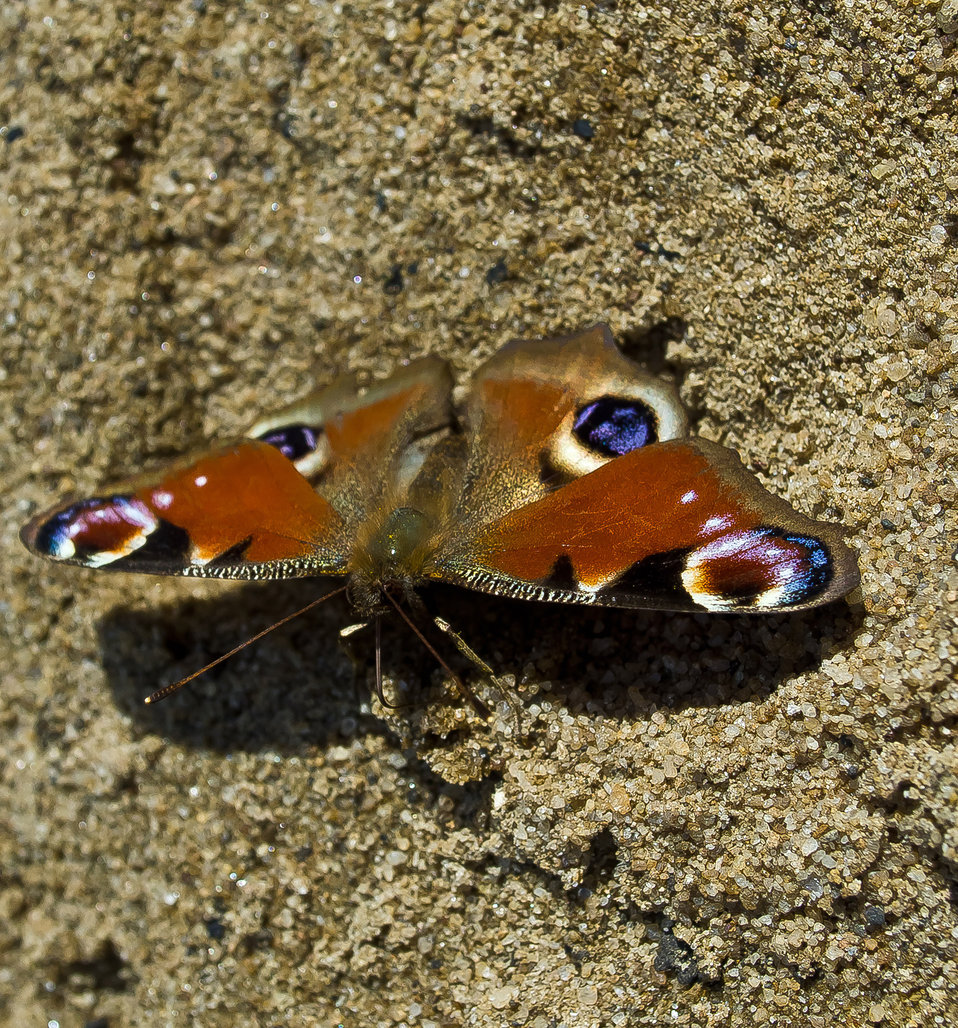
Butterfly - macro.